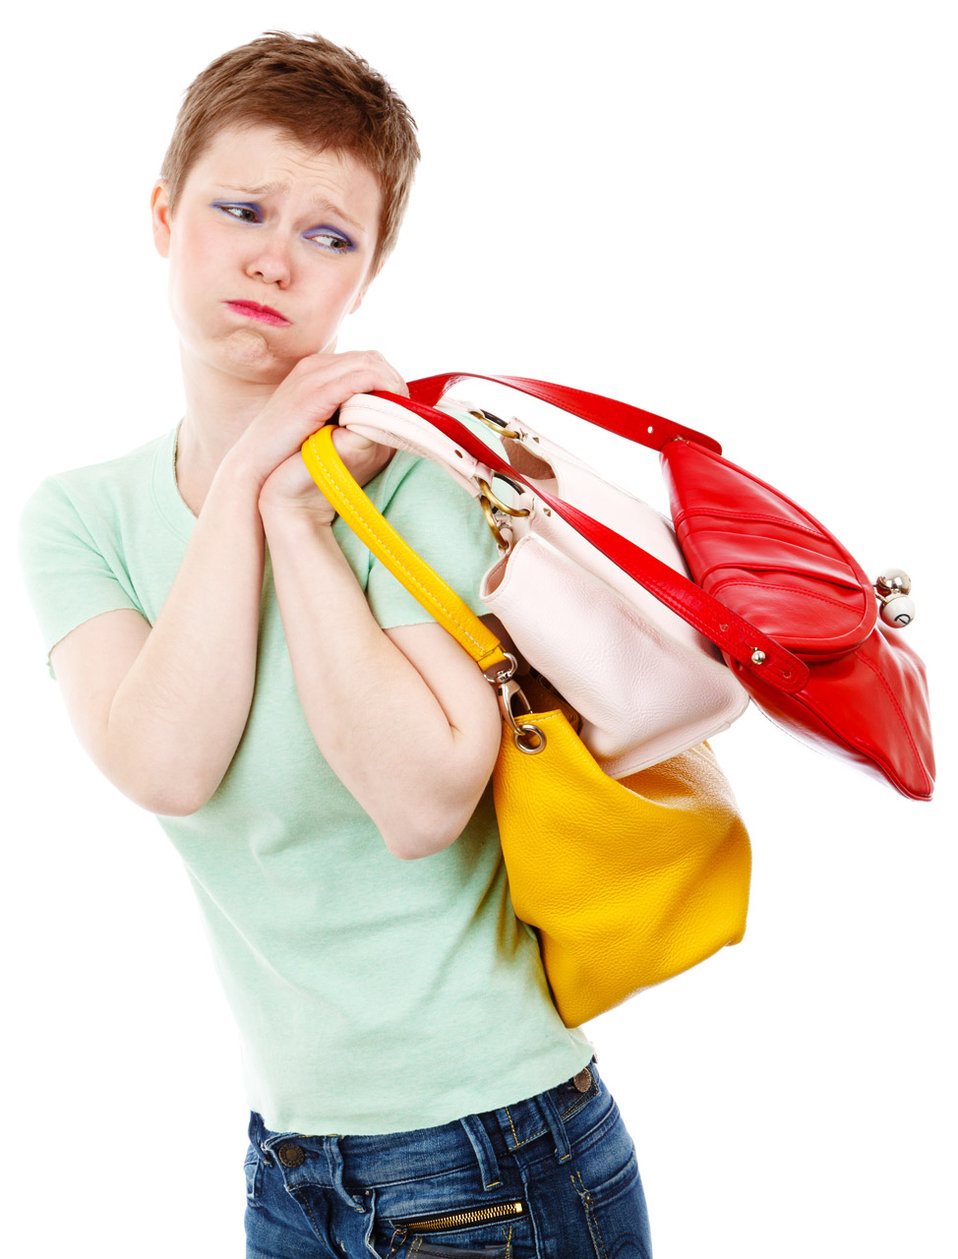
Carrying a heavy shopping

Young woman carrying heavy colorful bags isolated on white background - jana svojsova.